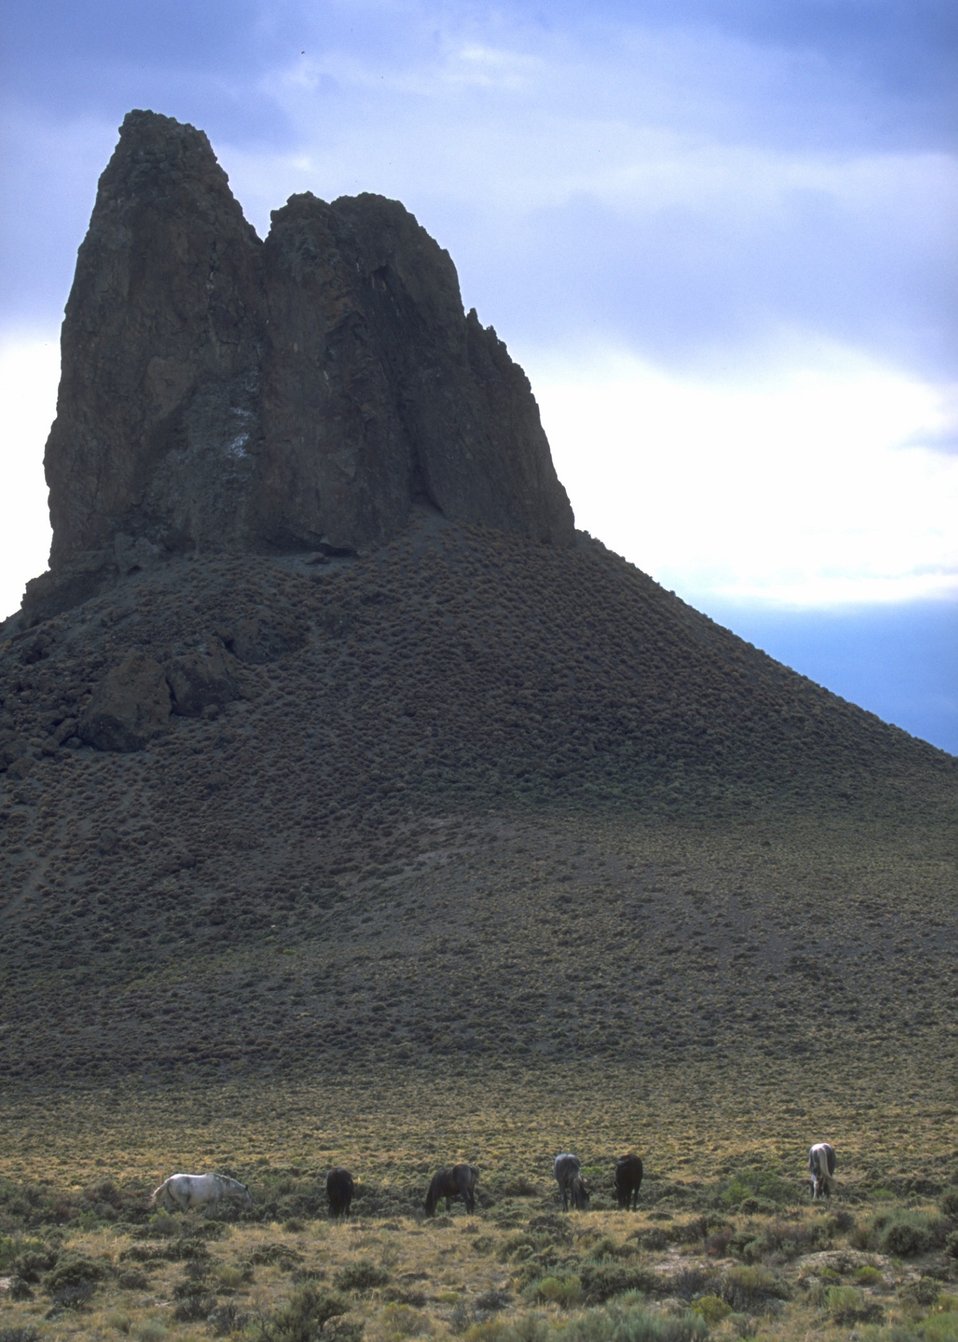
Wild Horses and Boar's Tusk, Rock Springs Field Office.